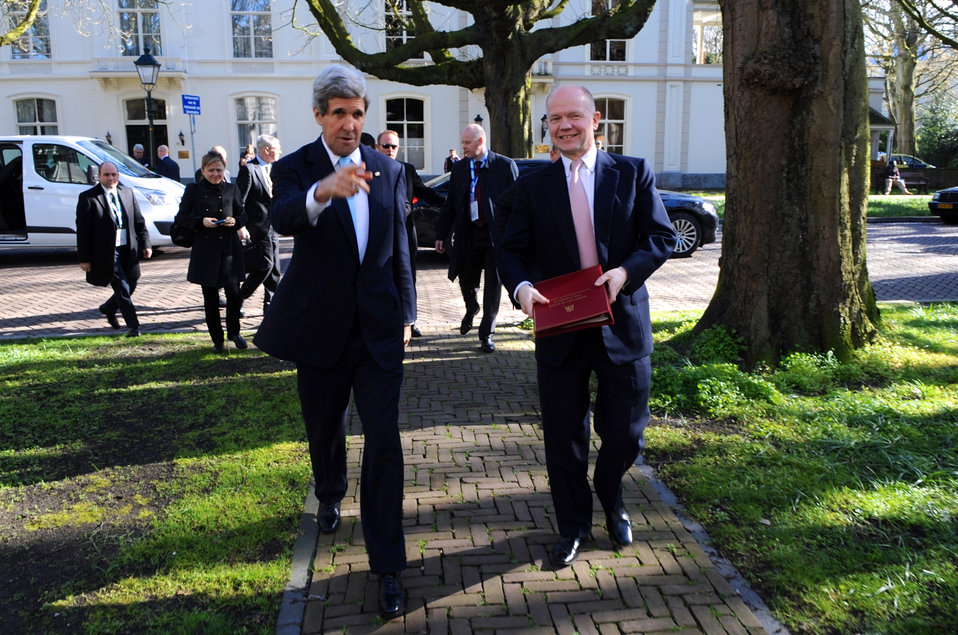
Secretary Kerry Points British Foreign Secretary Hague Toward Meeting Site in the Netherlands

U.S. Secretary of State John Kerry leads British Foreign Secretary William Hague into a bilateral meeting they held on the margins of the National Security Summit in The Hague, the Netherlands, on March. 24, 2014.